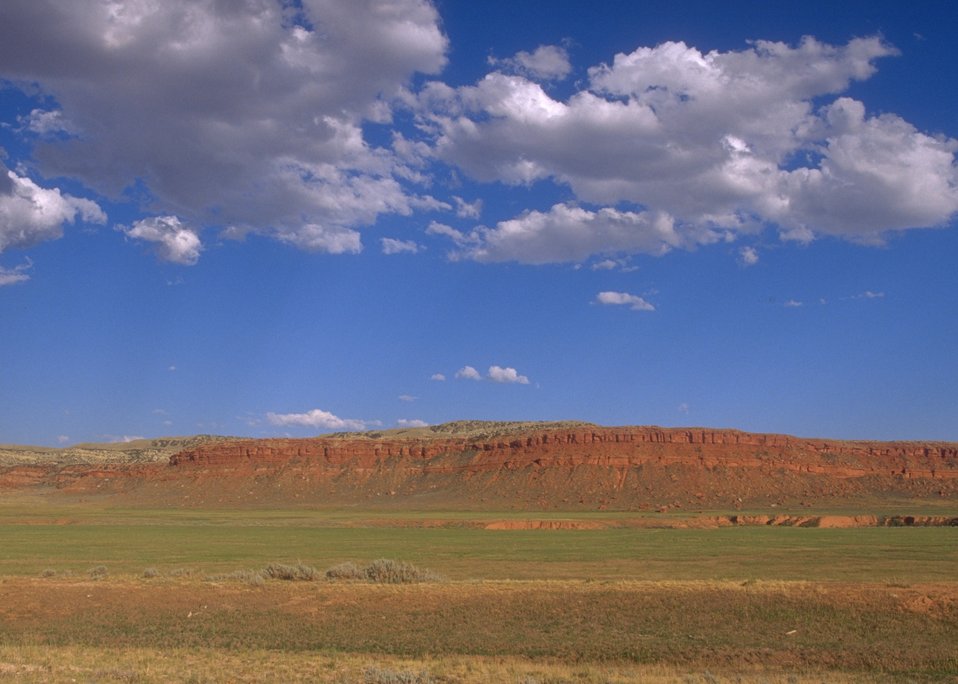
View of Red Wall, Buffalo Field Office.